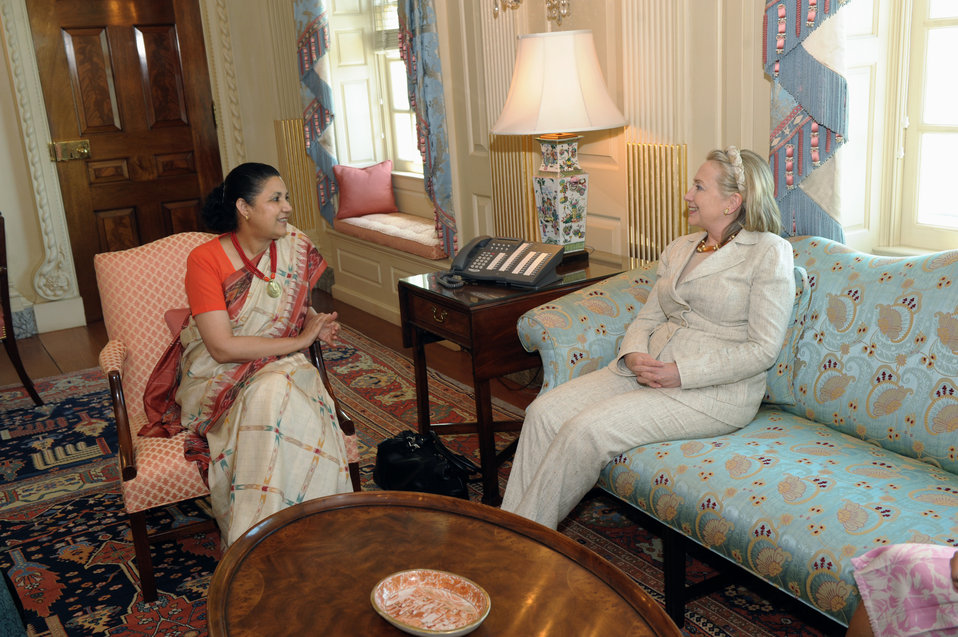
Secretary Clinton Meets With Indian Ambassador Shankar

U.S. Secretary of State Hillary Rodham Clinton, right, meets with Indian Ambassador the U.S. Meera Shankar, leftt, at the U.S. Department of State in Washington, D.C., on July 27, 2011.